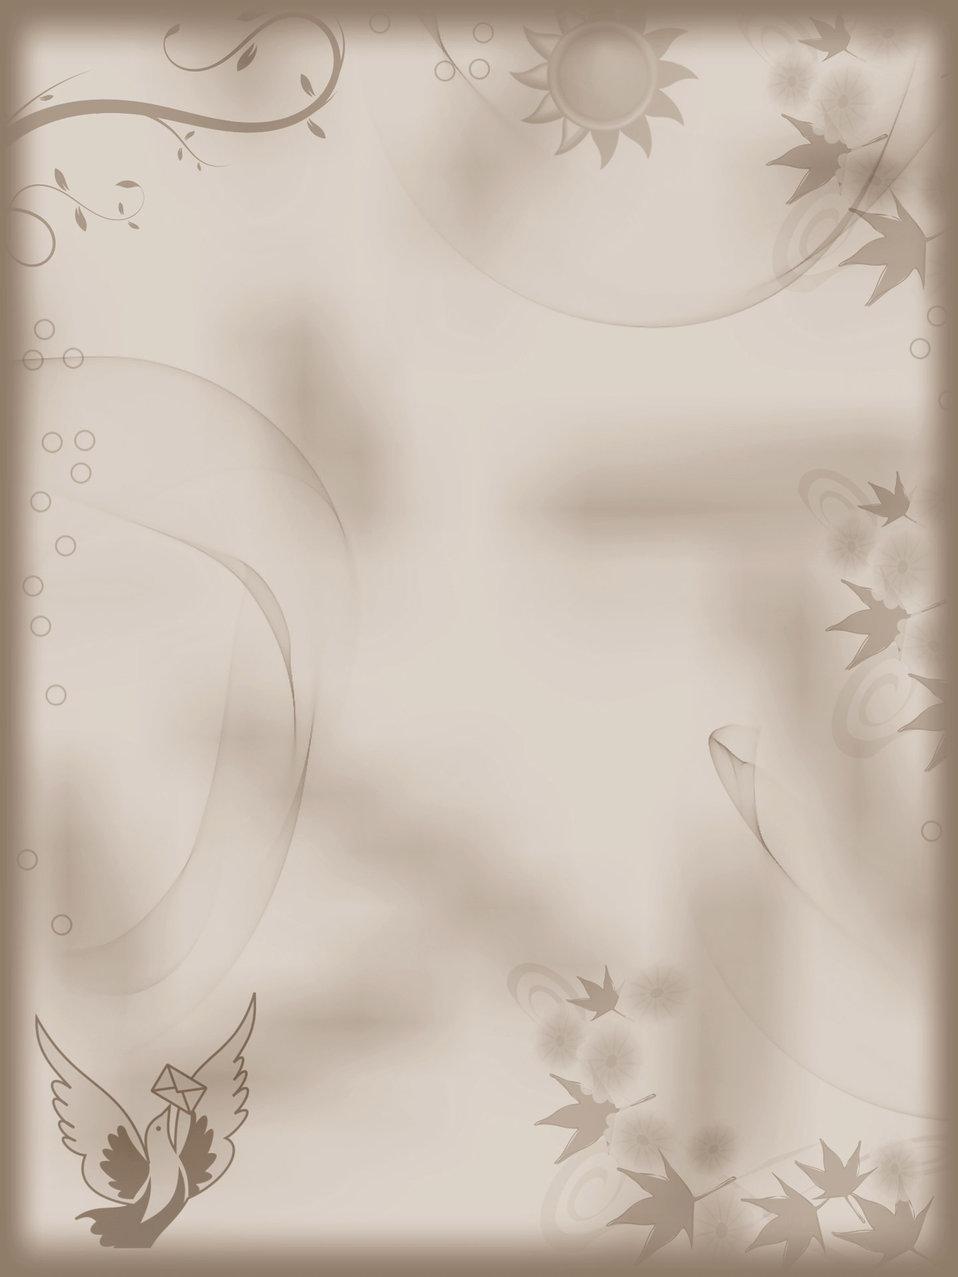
Background 368

Background.